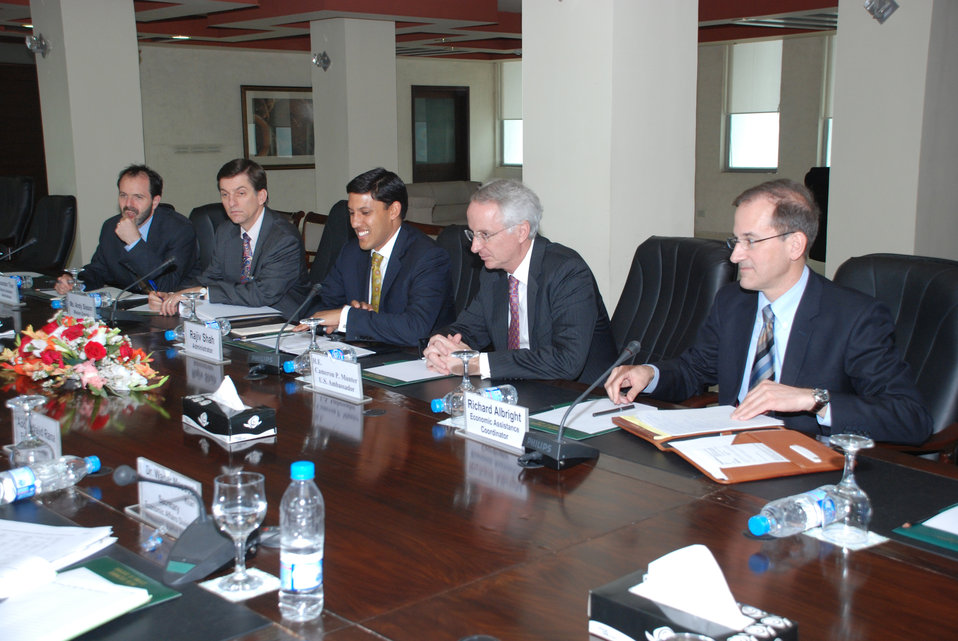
USAID and Pakistan Working Together to Promote Growth, Prosperity at Islamabad on April 13, 2012

Dr. Rajiv Shah (USAID) met with Finance Minister Hafeez Shaikh at the Ministry of Finance. The two discussed the important role economic assistance brings to the bilateral relationship, and how U.S. civilian assistance can create jobs and raise incomes for more Pakistanis.